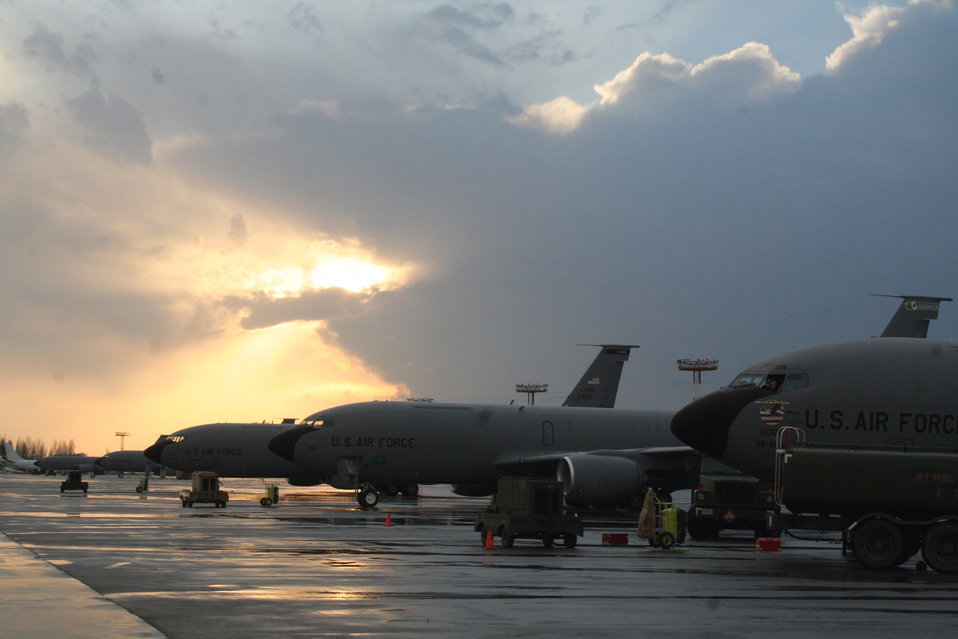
Weather flight learning to read the clouds in Kyrgyzstan

An unseasonal thunderstorm clears just as the sun sets over the flightline at Manas Air Base, Kyrgyzstan, where KC-135 Stratotanker aircrews waited out the worst of the lightning before taking off.